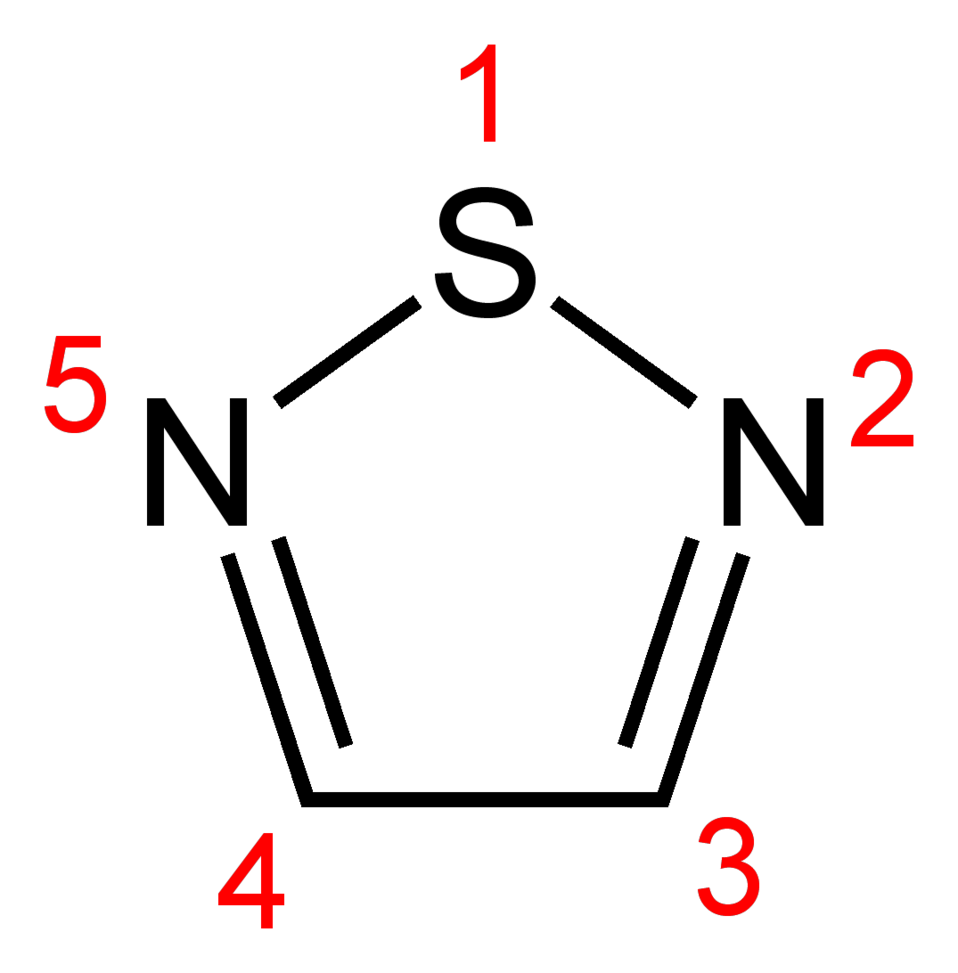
Numbered skeletal formula of 1,2,5-thiadiazole, C2H2N2S